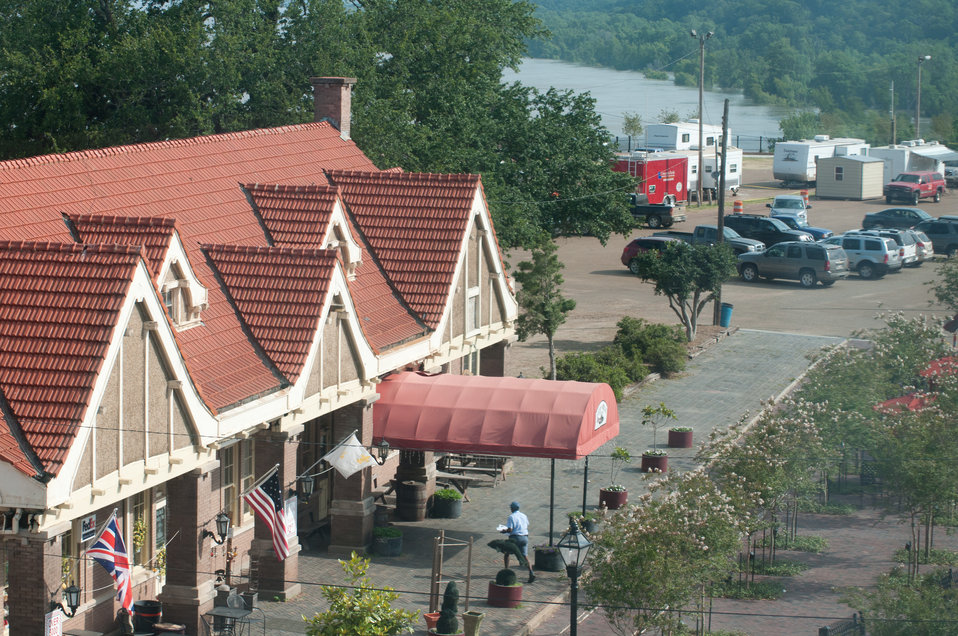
Mobile command posts from Concordia Parish, Vidalia Police Department, CPSC, Coast Guard, and other local, state, and federal agencies are setup on the riverfront overlook in Natchez, MS, on Thursday, May 19, 2011.